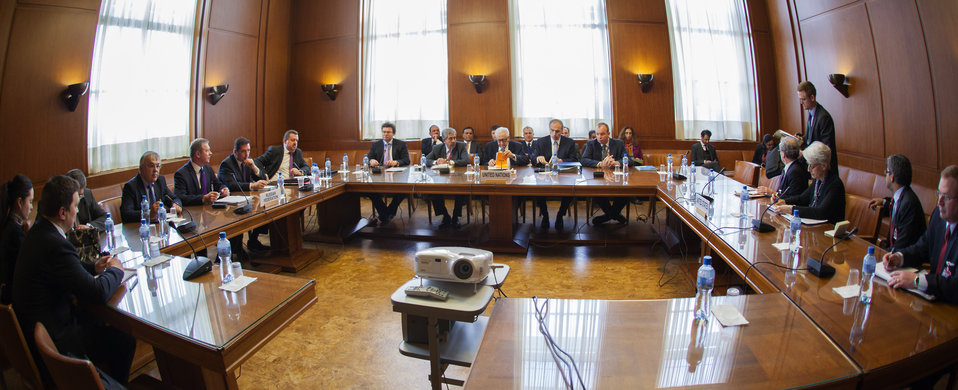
Under Secretary Sherman Arrives at UN for Meeting on Syria

Under Secretary of State for Political Affairs Wendy Sherman arrives at the United Nations to participate in a trilateral meeting with Joint Special Representative Brahimi and Russian Deputy Minister of Foreign Affairs Gatilov in Geneva, Switzerland on February 13, 2014. [U.S. Mission Geneva / Eric Bridiers]